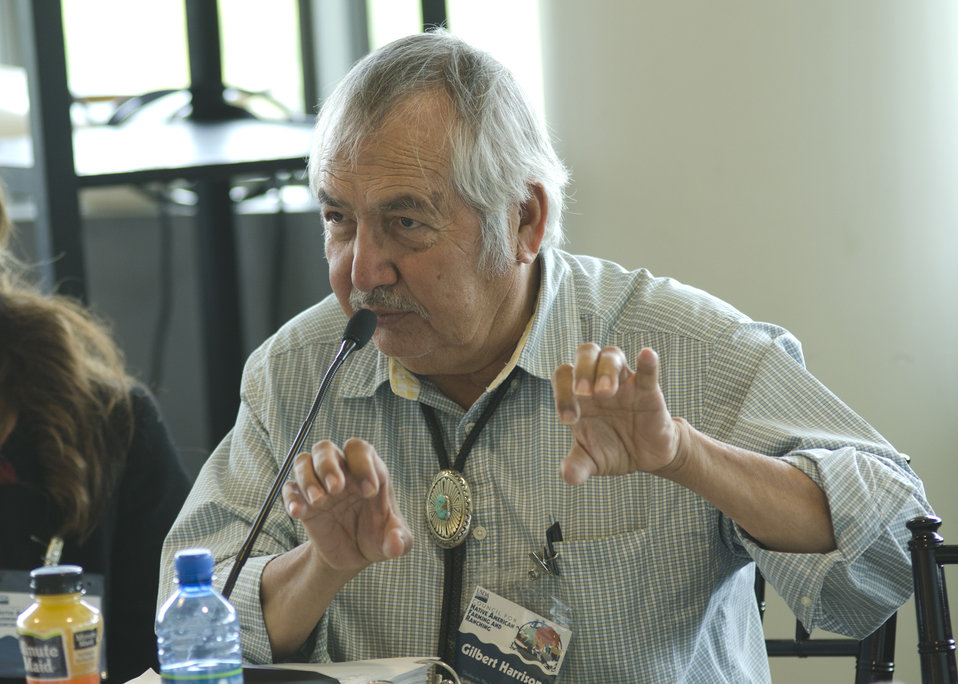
Navaho Nation Rancher in Shiprock, NM., Gilbert Harrison, speaks at the first business meeting of the U.S. Department of Agriculture’s (USDA) Council for Native American Farming and Ranching (CNAFR) held at the first business meeting of the U.S. Department of Agriculture’s (USDA) Council for Native American Farming and Ranching (CNAFR) held at the National Museum of the American Indian in Washington, D.C., on Tuesday, Aug. 14, 2012. CNAFR was created to advise the Secretary on ways to eliminate barriers to participation for Native American Farmers and Ranchers in USDA programs. The Council was established as part of the Keepseagle settlement, and is conducted under the oversight of USDA's Office of Tribal Relations under the Office of the Secretary of Agriculture.